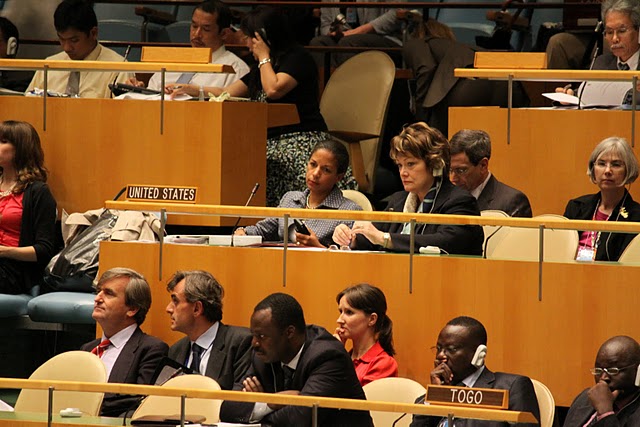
Ambassador Rice, Under Secretary Tauscher, and Ambassador Burk Participate at U.N. Nuclear Nonproliferation Conference

Ambassador Rice, Under Secretary Tauscher, and Ambassador Burk participate in the U.S.-sponsored disarmament side event at the Review Conference of the Nuclear Nonproliferation Treaty at the U.N. Headquarters, New York, New York, May 5, 2010.